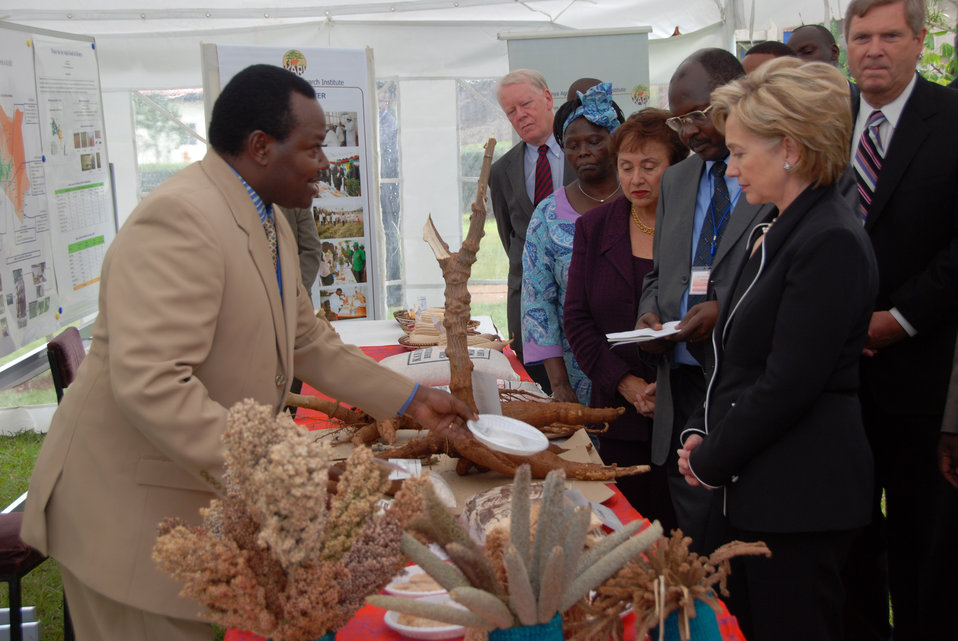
Secretary Clinton Visits Kenyan Agricultural Research Institute

U.S. Secretary of State Hillary Rodham Clinton views a 'Drought Tolerance Research and Value Addition' exhibition during a tour of the Kenyan Agricultural Research Institute (KARI) near Nairobi, Kenya August 5, 2009. In the background (left to right) are U.S. Ambassador to Kenya chael E. Ranneberger, Kenyan environmental and political activist Wangari Maathai, U.S. Representative for New York's 18th District Nita M. Lowey, KARI Director Dr. Ephraim Mukisira, and U.S. Secretary of Agriculture Tom Vilsack.